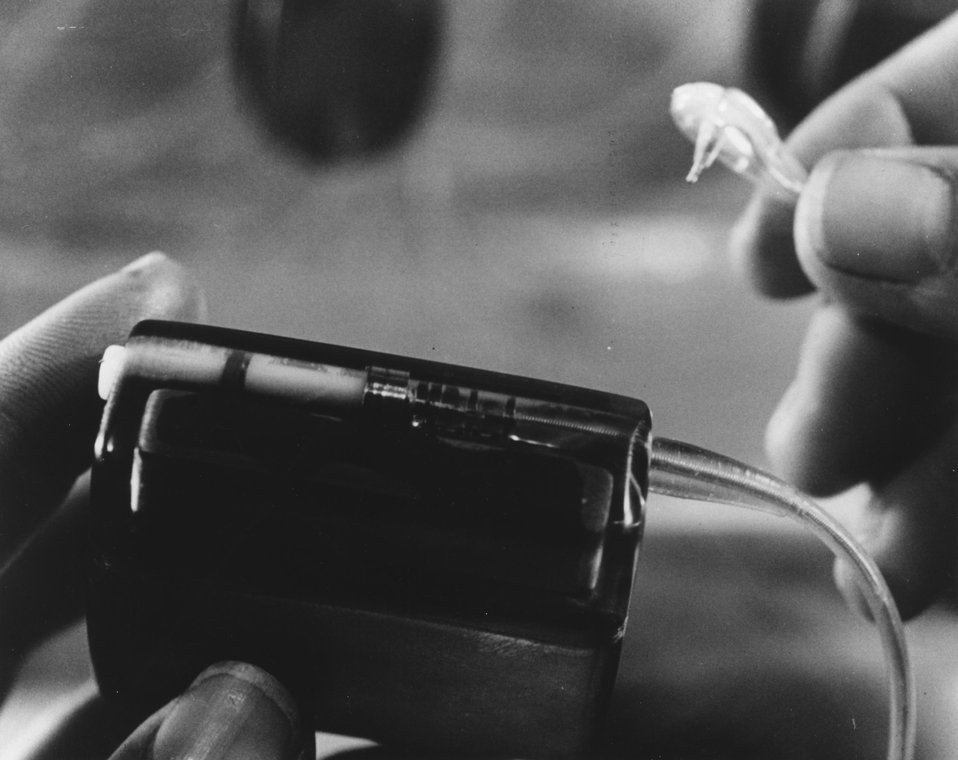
Completed heart pacer and heart lead. Conventional pacemaker electronic circuit is sealed in plastic and entire unit is hermetically sealed and impervious to body fluids. Circa 1971.